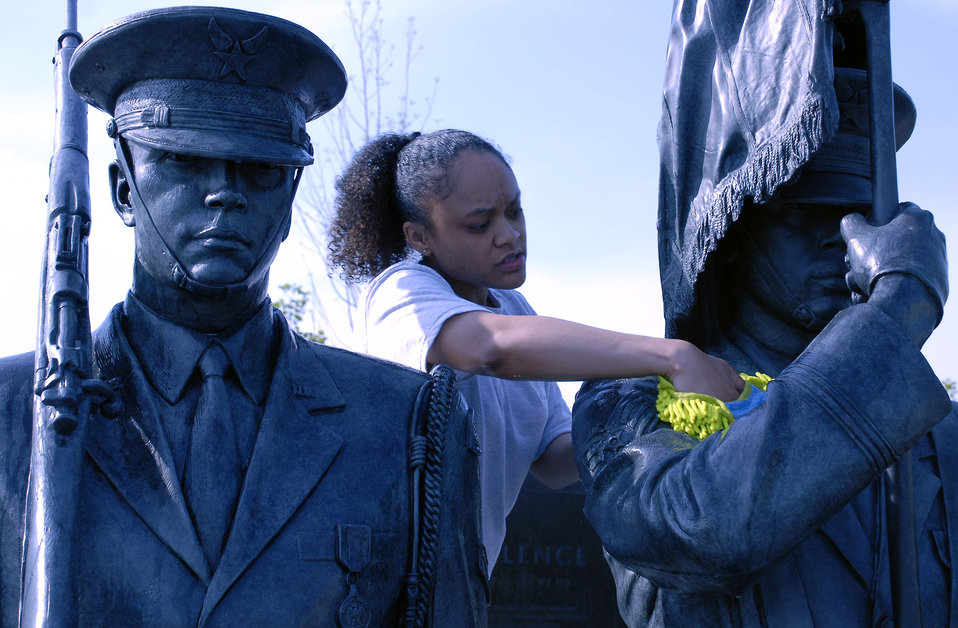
Sprucing up the Air Force Memorial

Tech. Sgt. Terisa Pennington scrubs a bronze honor guard statue during a work party April 19 at the Air Force Memorial. More than 50 volunteers from Air Force Sergeants Association Chapter 300 in Washington D.C. gathered to help spruce up the site. Dedicated on Oct., 14, 2006, the memorial honors the service and sacrifice of the men and women of the United States Air Force and its predecessor organizations. The wall bears the inscriptions of combat campaigns and expeditionary operations and contains the words of Air Force leaders that relate to the service's core values of Integrity First, Service Before Self and Excellence in All We Do. The memorial is located just outside the nation's capital in Arlington, Va., adjacent to Arlington National Cemetery and overlooking the Pentagon.